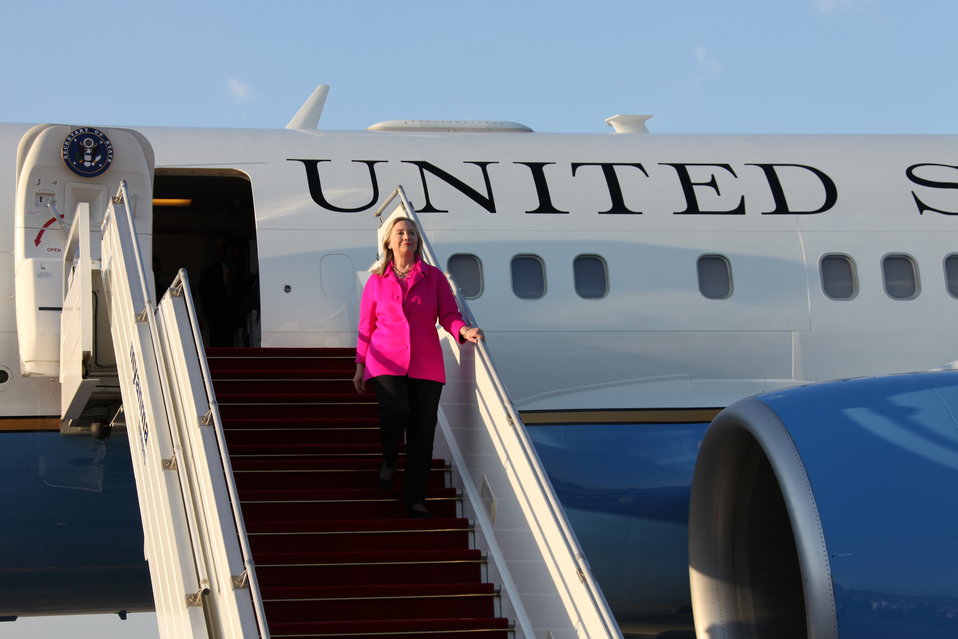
Secretary Clinton Arrives in Nay Pyi Taw

U.S. Secretary of State Hillary Rodham Clinton arrives in Nay Pyi Taw to begin her historic visit to Burma on November 30, 2011.